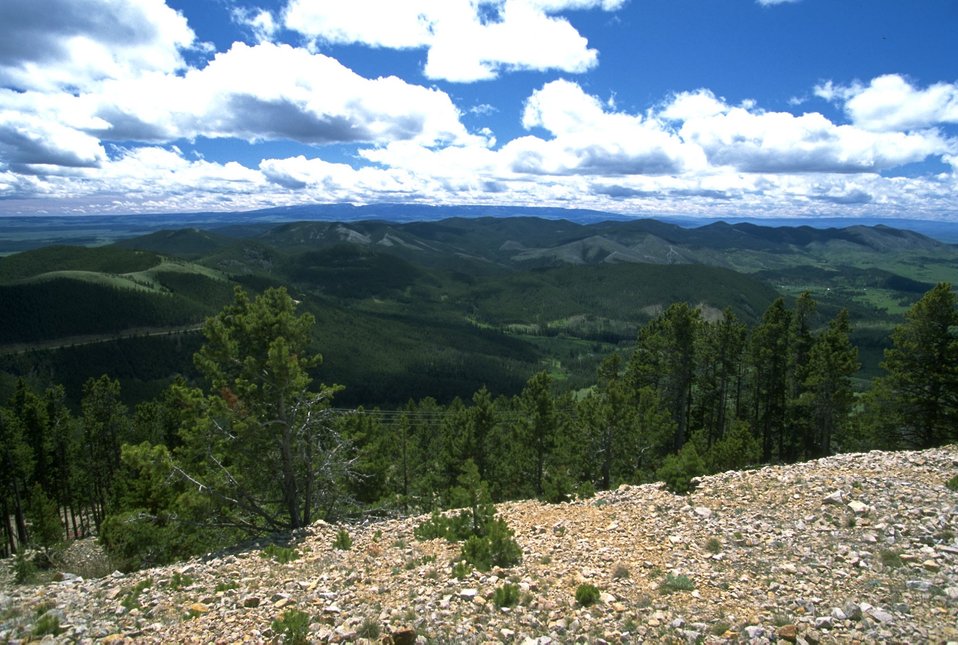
Forested areas in the Judith Mountains